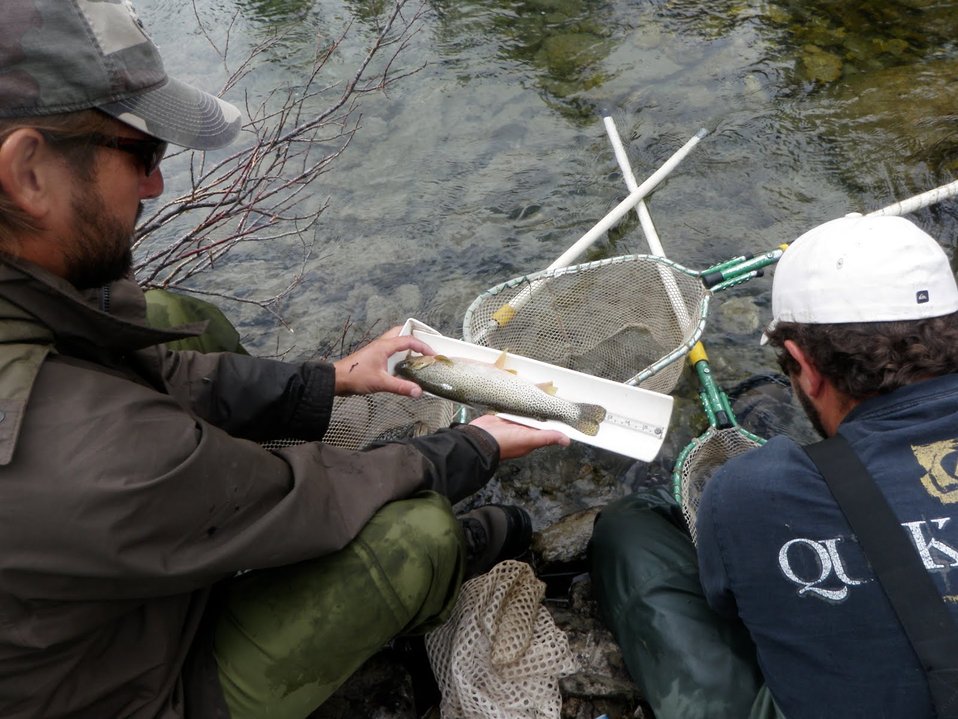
Bull Trout

Weighing a juvenile bull trout.